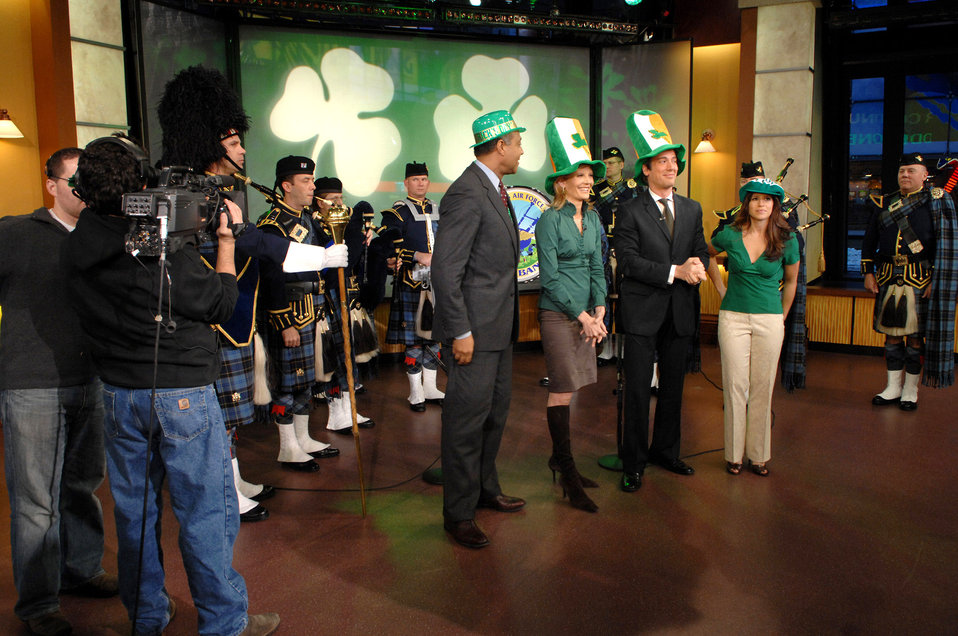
Reserve pipe band featured on St. Patrick's Day

The U.S. Air Force Reserve Pipe Band performs traditional Celtic music during an appearance on the Good Morning America show in New York City March 17, 2007. The Pipe Band performed at the Good Morning America show prior to participating in the New York City St. Patrick's Day parade.